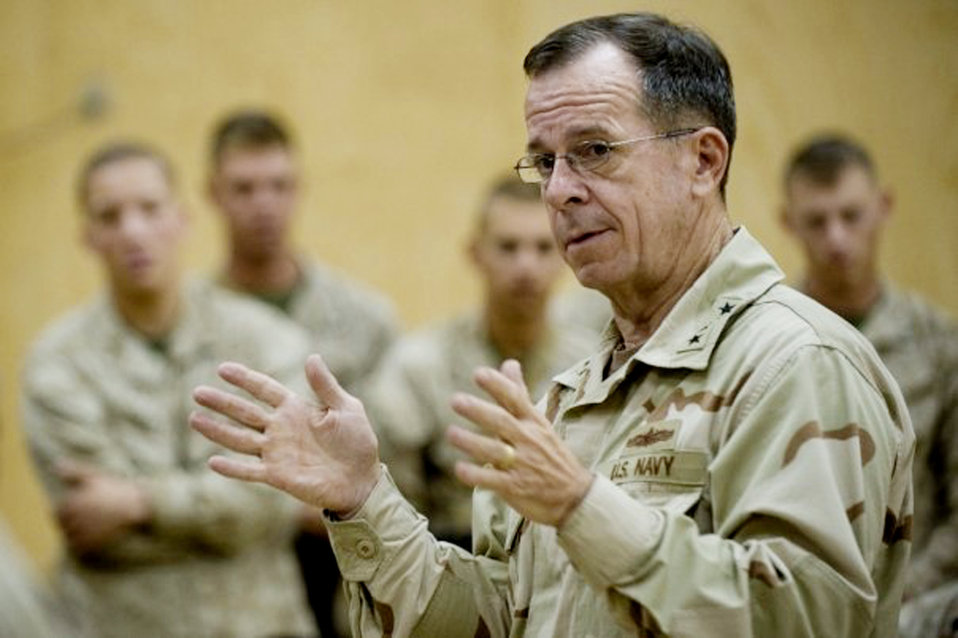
CJCS thanks families

Adm. Mike Mullen, chairman of the Joint Chiefs of Staff, shown here visiting Camp Leatherneck in Afghanistan July 17, 2009, sends his thanks to all military families in honor of their contributions to the nation.